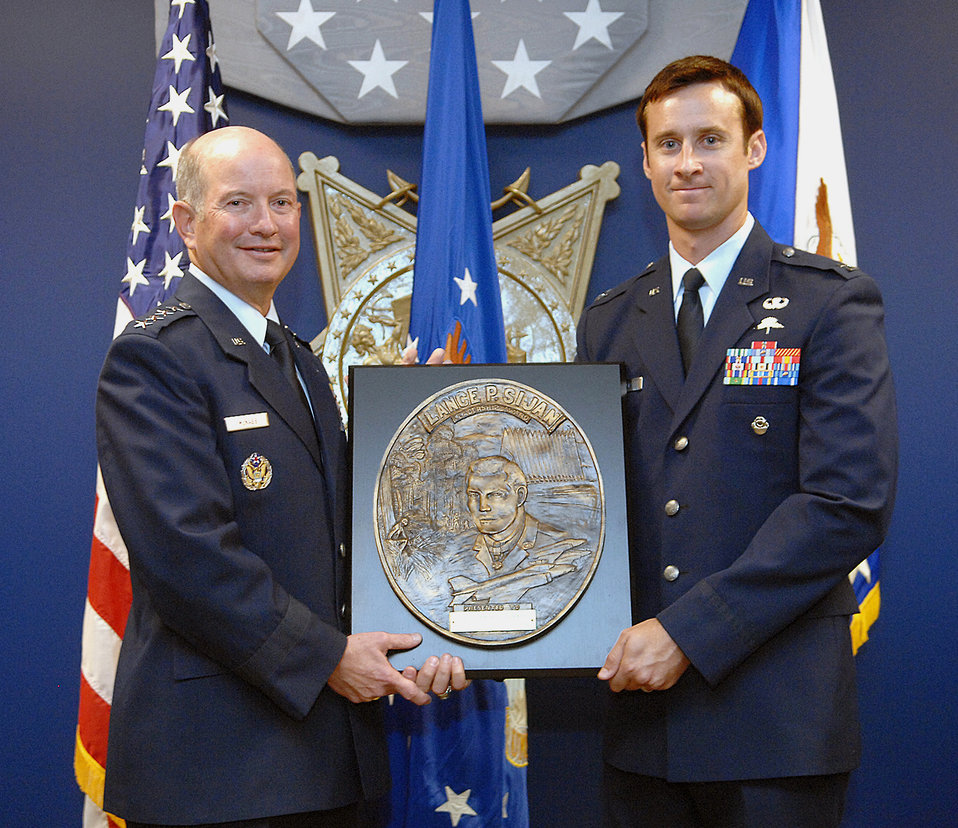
Airmen receive Sijan leadership award

Vice Chief of Staff of the Air Force Gen. Duncan J. McNabb presents the Lance P. Sijan Air Force Leadership Award to Capt. Steward J. Parker in a ceremony Aug. 20 at the Pentagon. Captain Parker is a special tactics officer assigned to the 21st Special Tactics Squadron at Pope Air Force Base, N.C. The Sijan Award recognizes Airmen who demonstrated outstanding leadership while assigned to an organization at the wing level or below.